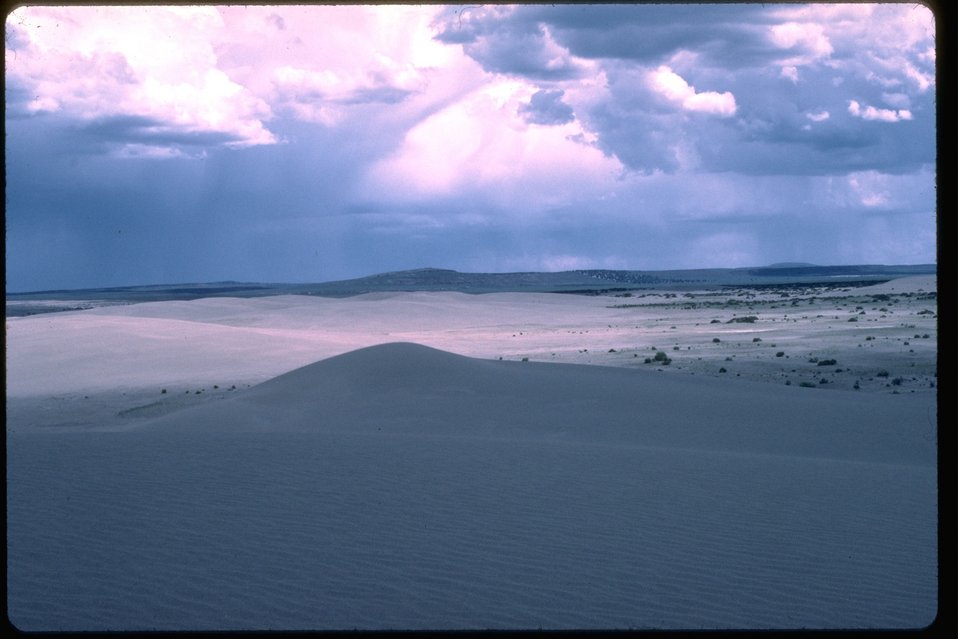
Sand Dunes Wilderness Study Area. OR 1-24